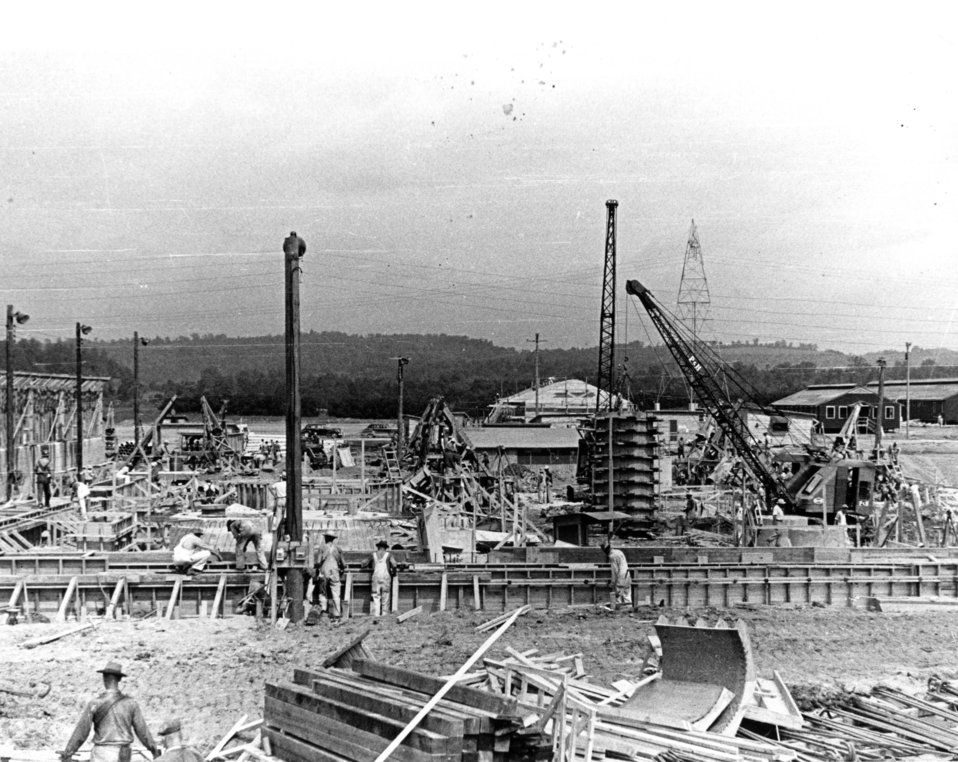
K-25 at Oak Ridge